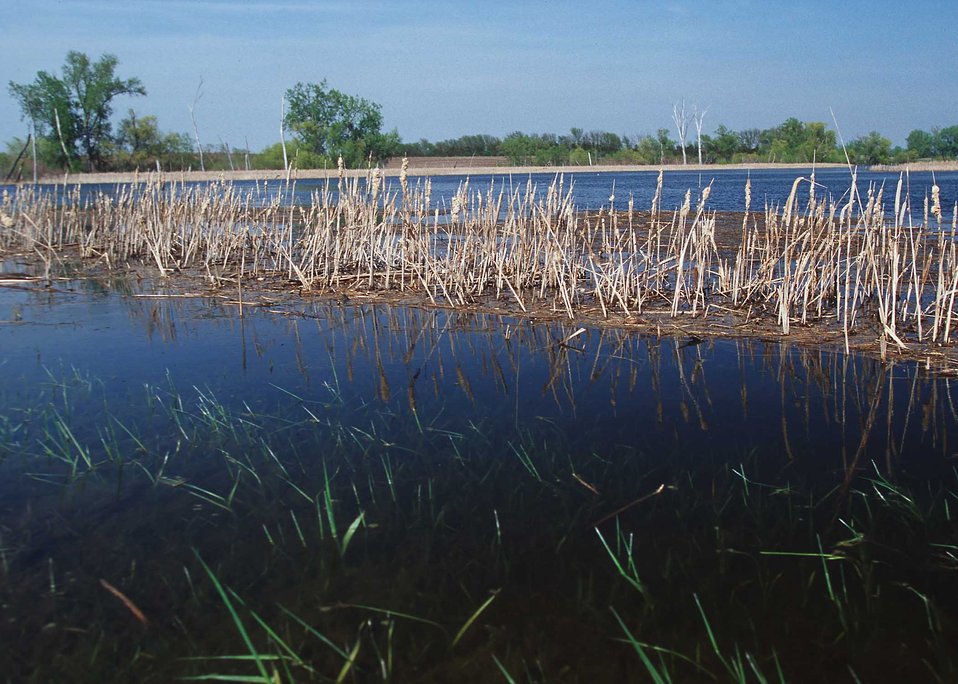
Wetlands recharge groundwater, store floodwaters, provide a filter for sediment and chemicals as well as provide wildlife habitat.